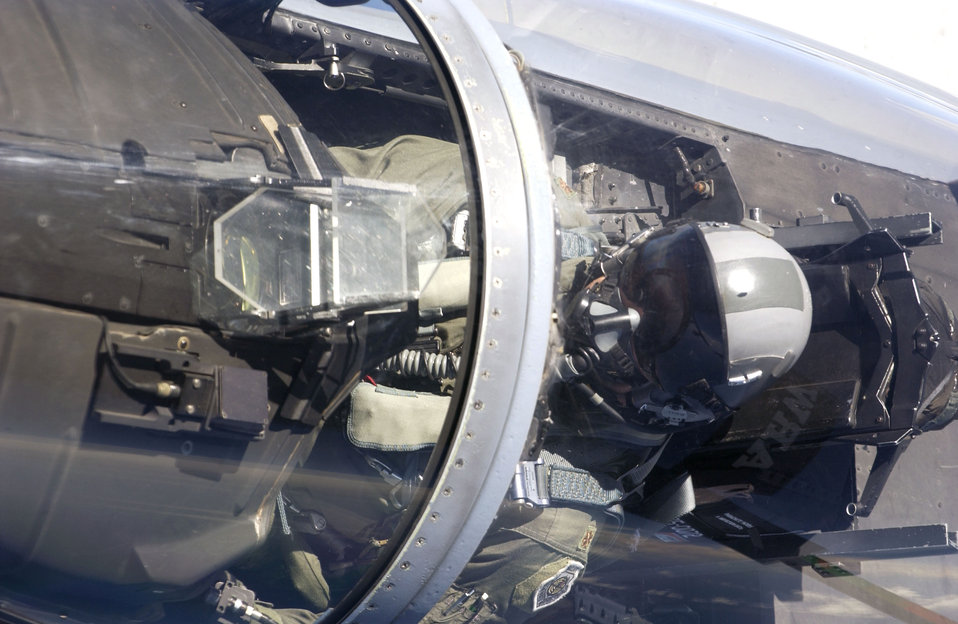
Refueling mission

Maj. David Lynch looks up from his F-15 Eagle during a refueling by a KC-135 from the 434th Air Refueling Wing near Jacksonville International Airport, Fla., on July 20. Major Lynch is with the Air National Guard's 125th Fighter Wing.